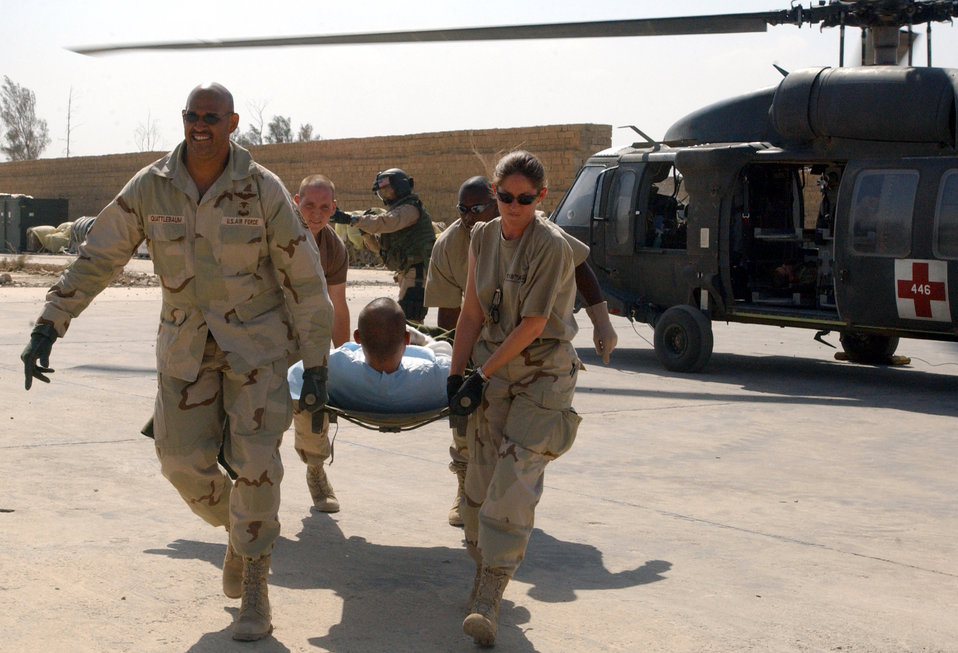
Medivac

OPERATION IRAQI FREEDOM -- Senior Master Sgt. Ken Quattlebaum (left) and 2nd Lt. Beverly Groogand (right) carry a wounded soldier from a helicopter to an ambulance en route to the mobile aeromedical staging facility. The 379th Expeditionary Aeromedical Evacuation Squadron at Baghdad International Airport comprises members of the Tennessee Air National Guard's 118th Aeromedical Evacuation Squadron in Nashville.